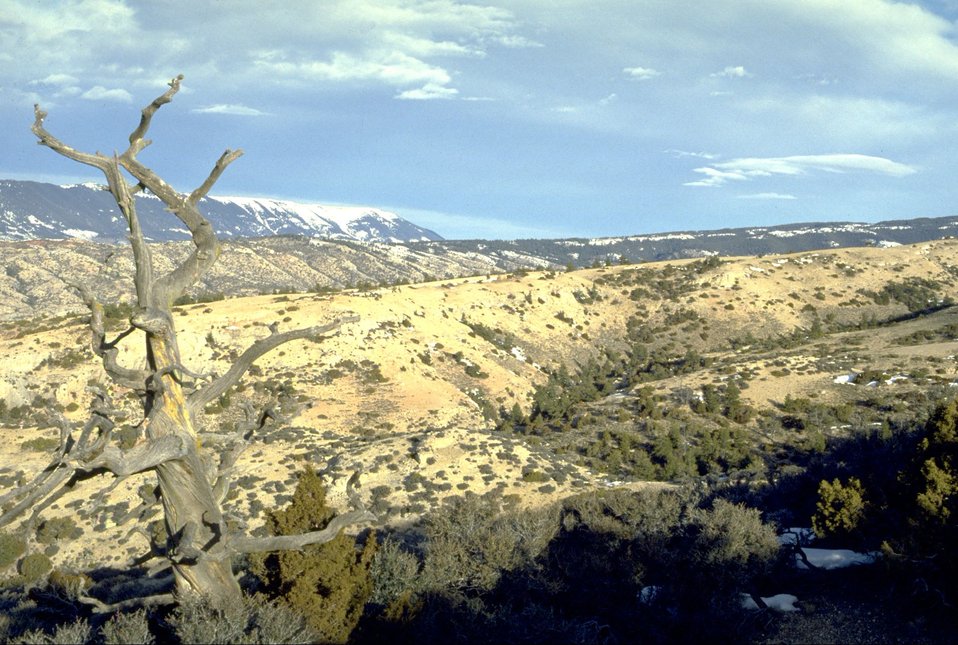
Pryor Mountain horse range in summer